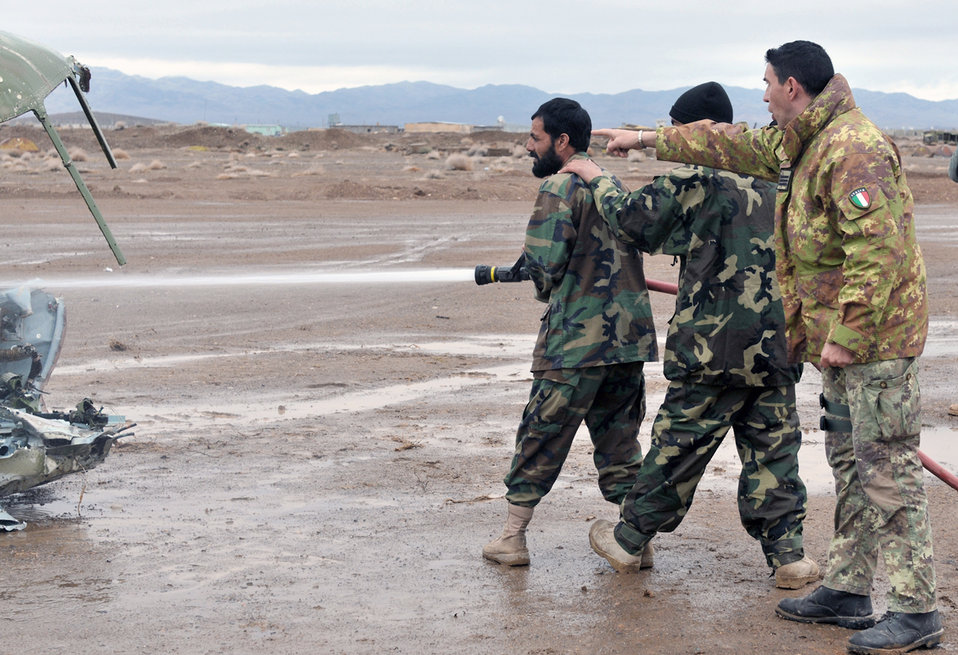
Advisory fire fighters key to AAF future

Italian air force 1st Marshall Ciro Tenace advises as Afghan airmen Abdull Fatho and Asis Ahmed extinguish a simulated helicopter crash March 6, 2011, at Shindand Air Base, Afghanistan. The airmen recently completed a four-month basic fire academy in Kabul. Marshall Tenace is an ITAF provider team adviser.